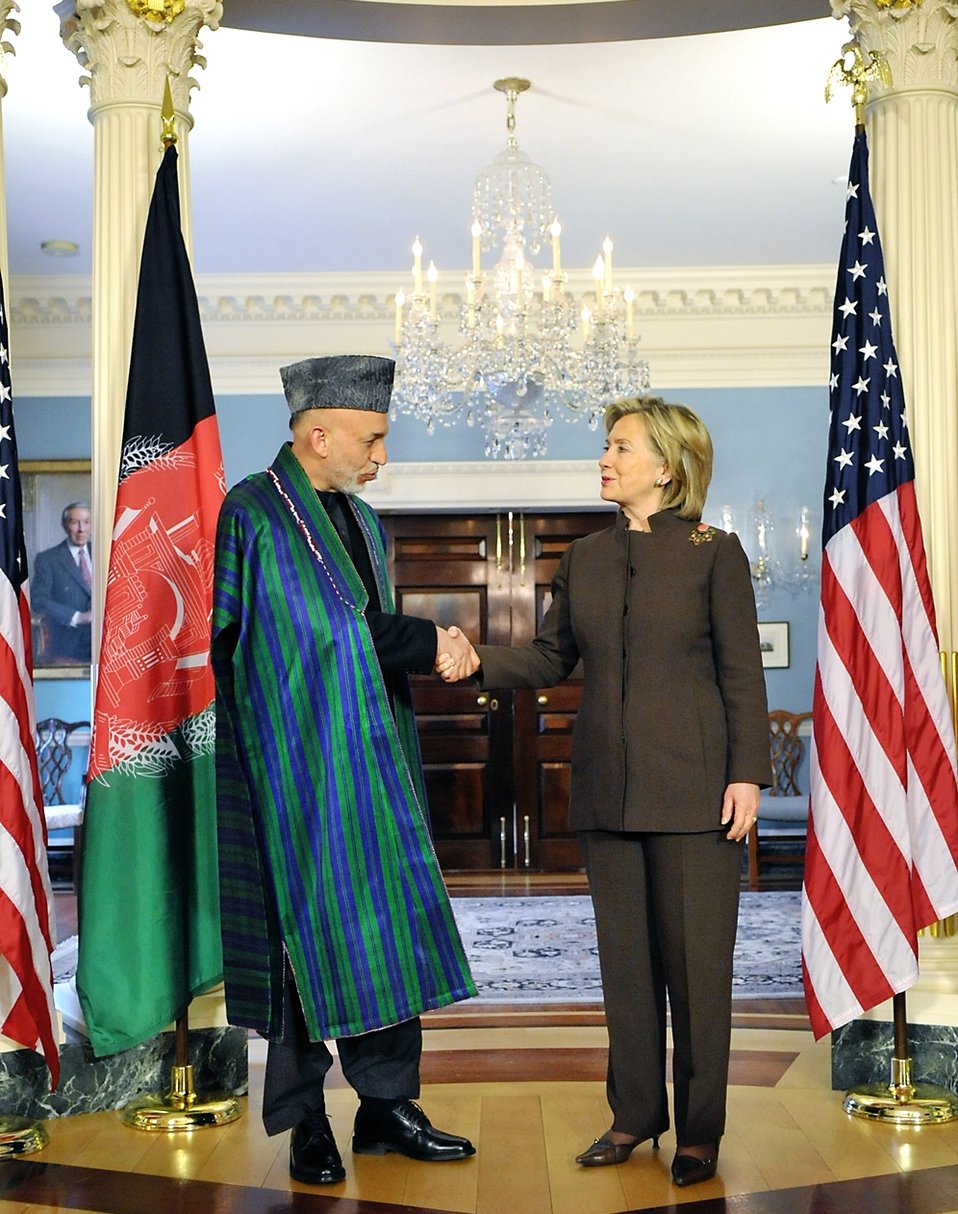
Secretary Clinton Hosts Bilateral Meeting With Afghan President Karzai

U.S. Secretary of State Hillary Rodham Clinton shakes hands with President of the Islamic Republic of Afghanistan Hamid Karzai during their bilateral meeting in the Treaty Room at the U.S. Department of State, Washington, D.C., May 11, 2010.